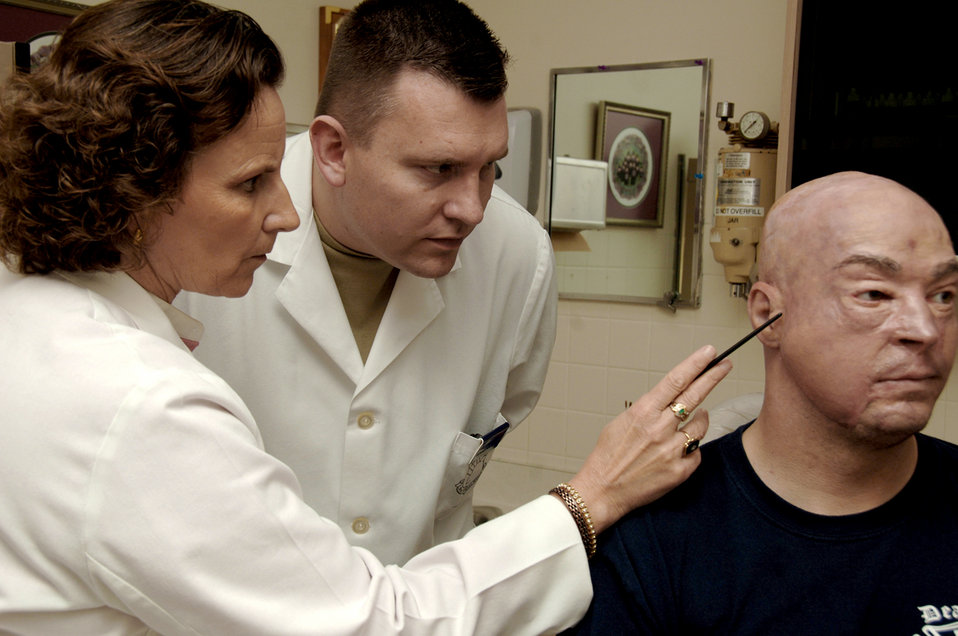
Anaplastologist creates facial parts for wounded

Nancy Hanson and Army Maj. Thomas Gunnell fit an ear prosthesis on Marine Capt. Ryan Voltin May 7, 2010, at the MacKown Dental Clinic at Lackland Air Force Base, Texas. Ms. Hanson is the staff anaplastologist at the MacKown Dental Clinic. She is the only certified clinical anaplastologist in the Department of Defense. Major Gunnell is a maxillofacial prosthetics fellow at the MacKown Dental Clinic.